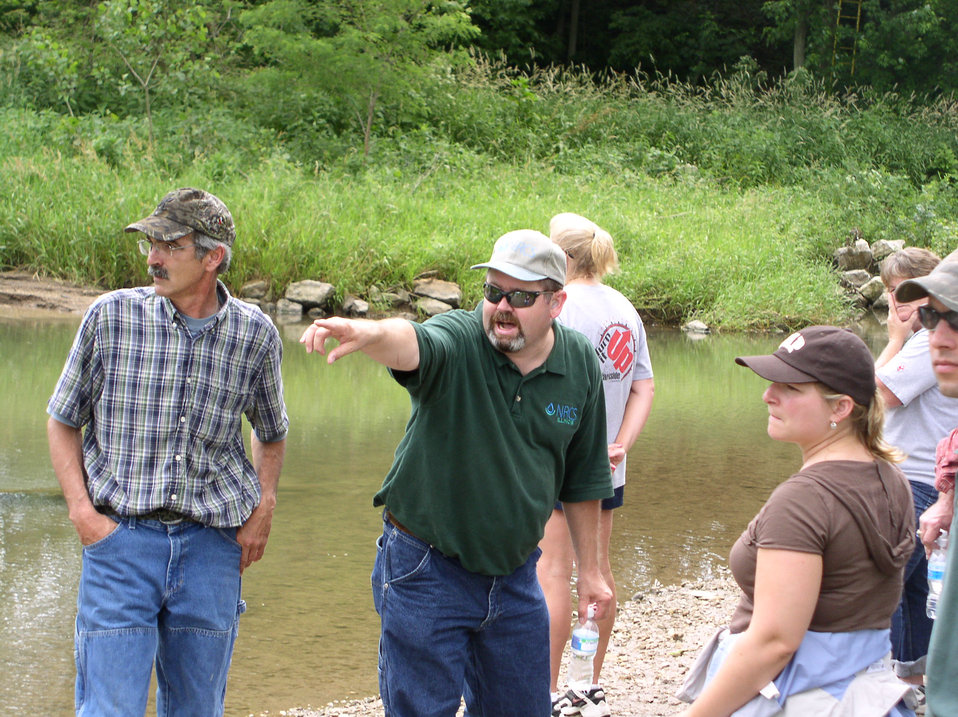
356 Malone Mud Creek Watershed Tour

U.S. Department of Agriculture (USDA) Natural Resource Conservation Service (NRCS) Tazewell County, IL District Conservationist Tim Malone (center) leads a watershed tour.